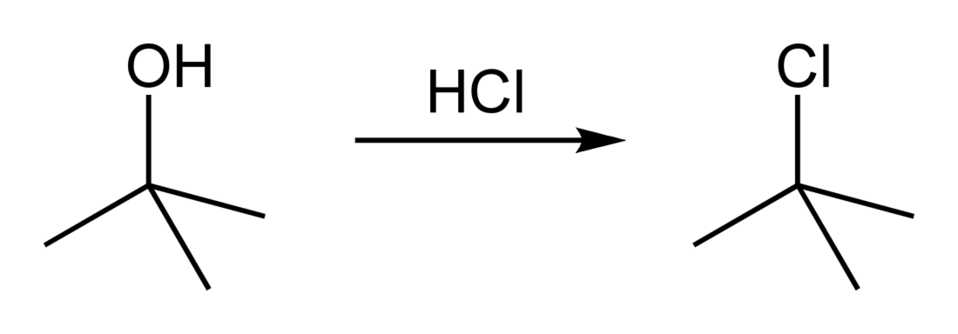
Reaction summary of the nucleophilic substitution of tert-butanol by hydrogen chloride